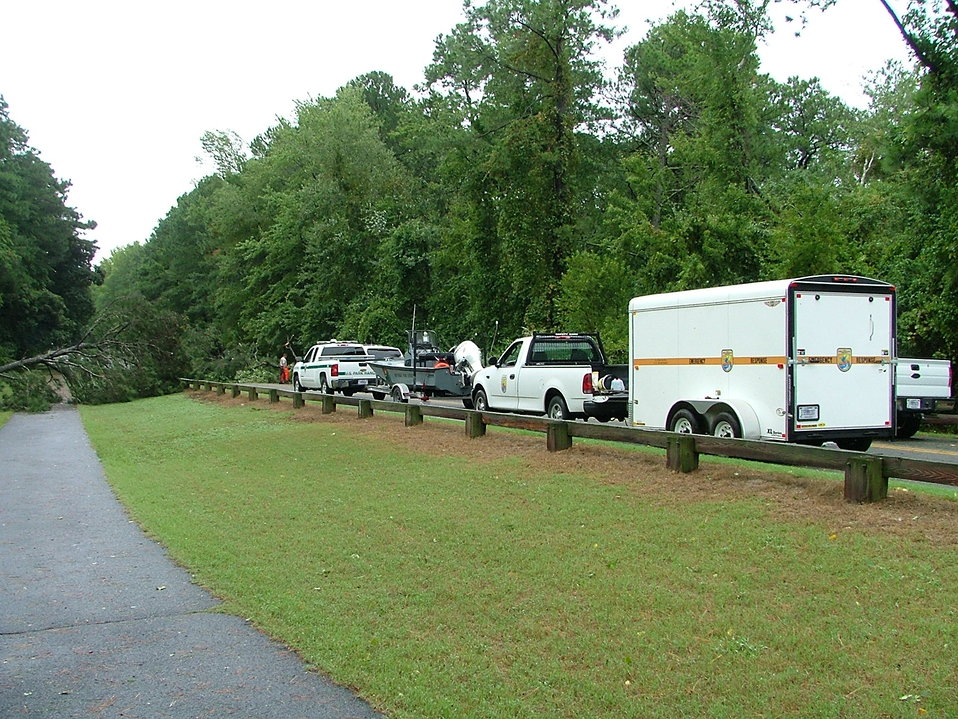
Returning to the refuge

U.S. Fish and Wildlife Service & National Park Service staff return to Chincoteague National Wildlife Refuge in Virginia and encounter fallen trees near refuge entrance after Hurricane Irene.